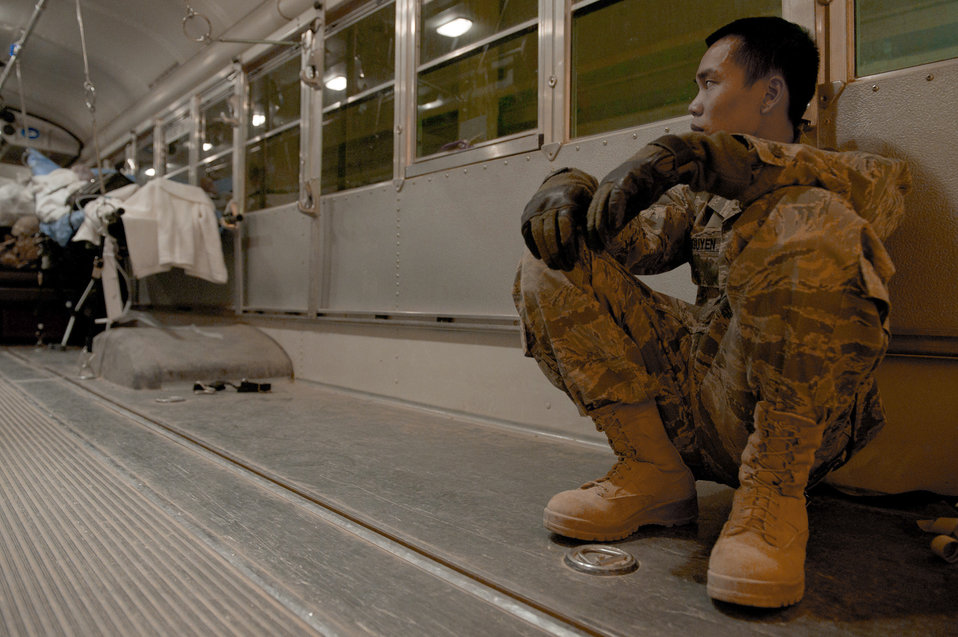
Transporting the wounded

Senior Airman Hoang Nguyen looks after a wounded Marine on an ambulance bus May 23, 2011, at Camp Bastion, Afghanistan. Airman Nguyen is an aerospace medical technician assigned to the 451st Expeditionary Aeromedical Evacuation Squadron.